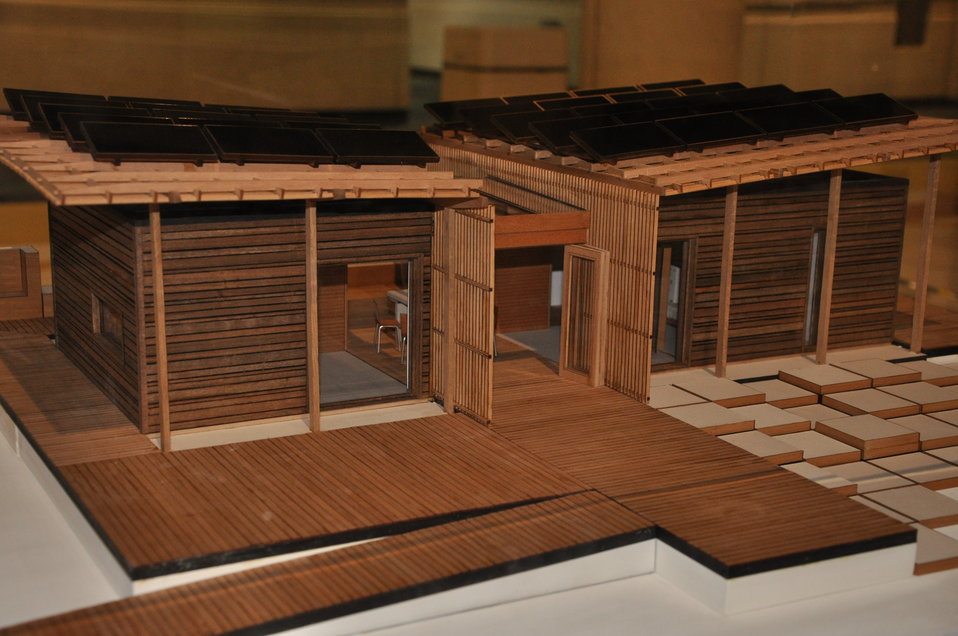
Team New Zealand